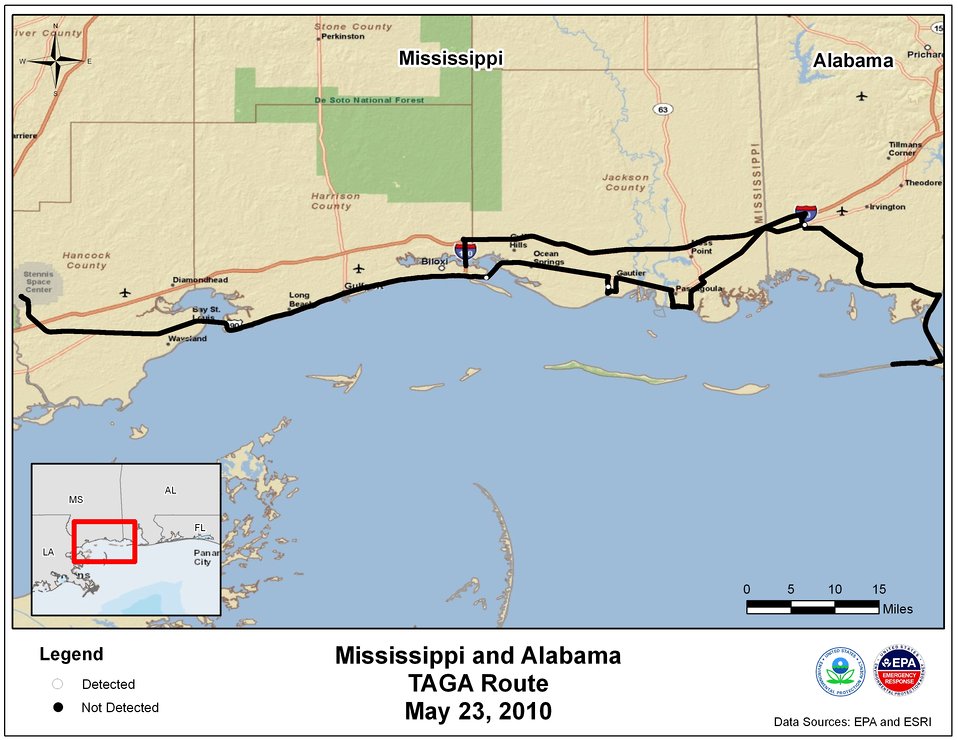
EPA TAGA Air Monitoring Locations May 23, 2010